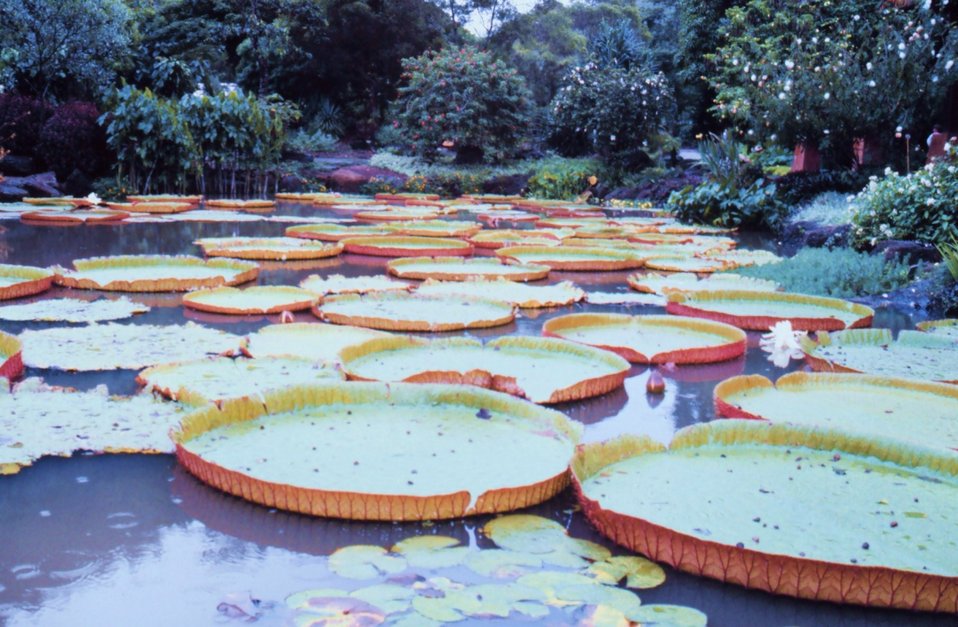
5-foot lily pads.